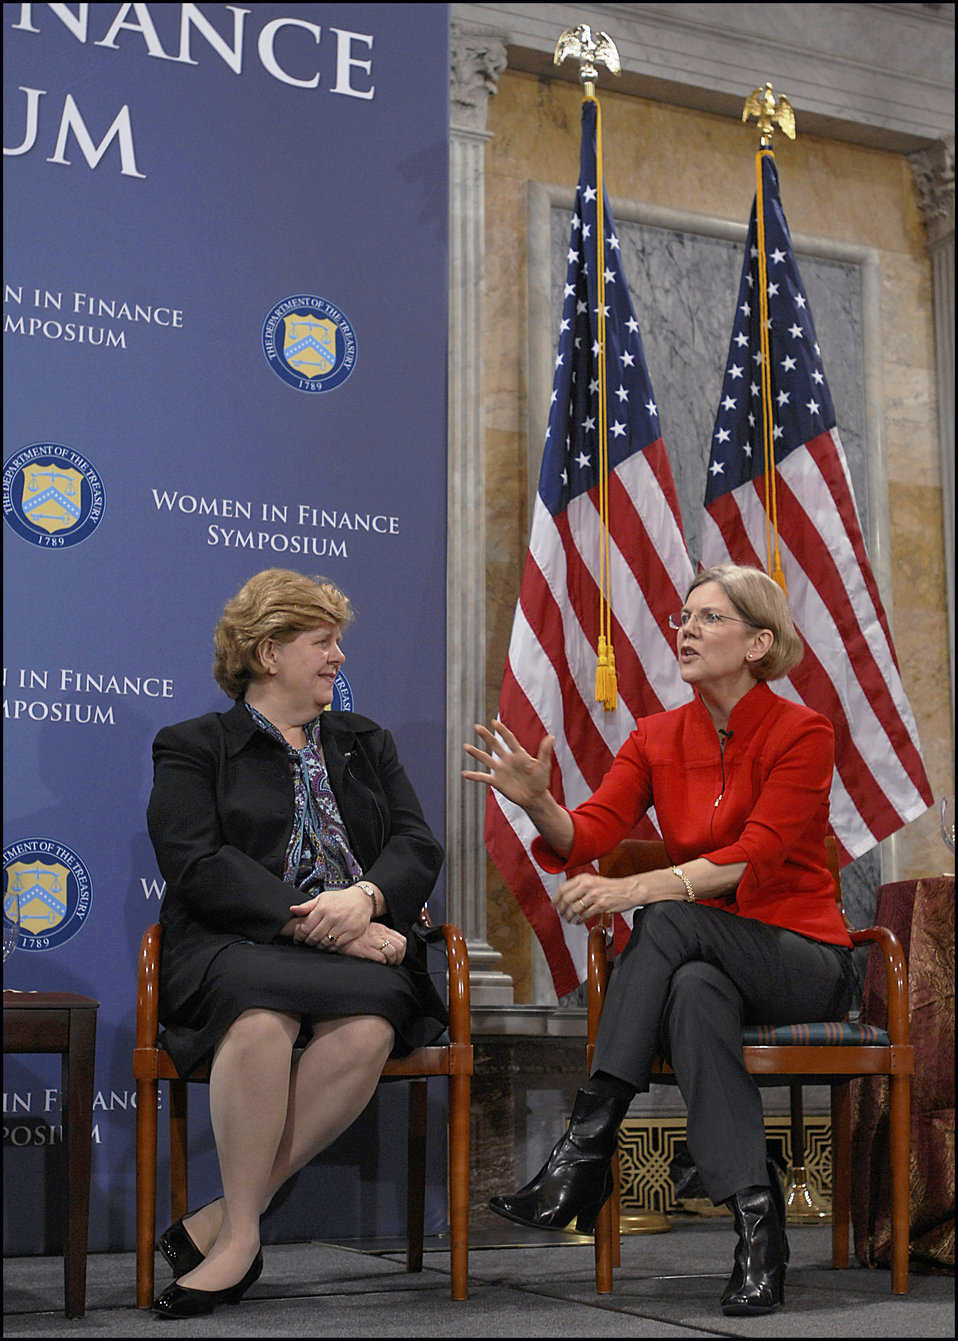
Women in Finance Symposium, 03/29/2010

Chair of the Council of Economic Advisers Christina Romer and Congressional Oversight Panel Chair Elizabeth Warren speak at the Women in Finance Symposium, March 29, 2010.